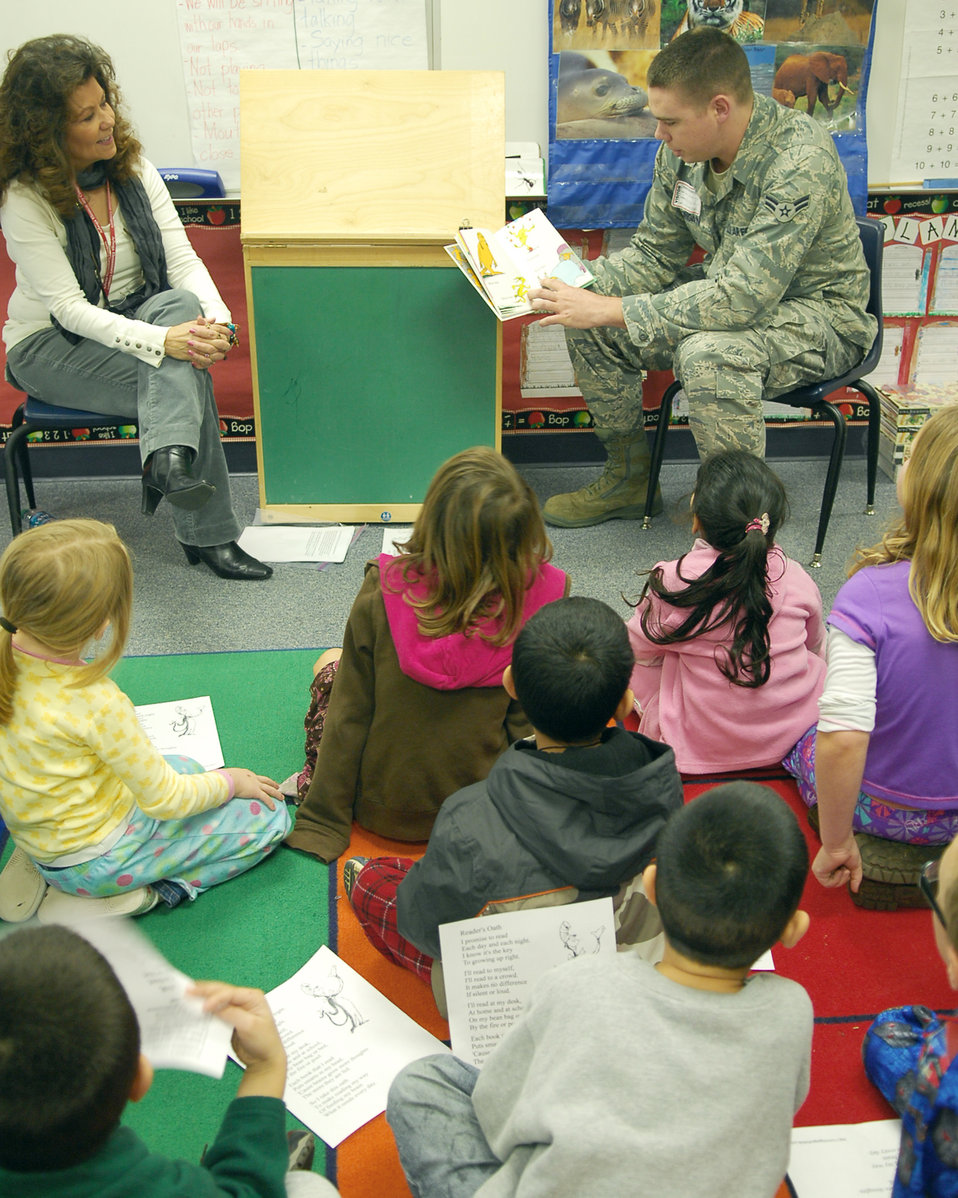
Beale Airmen 'Read Across America'

Airman 1st Class Timothy Clingan reads aloud to children at Arboga Elementary School, March 2, 2010 at Beale Air Force Base, Calif. Airmen Clingan is from the 9th Communications Squadron.